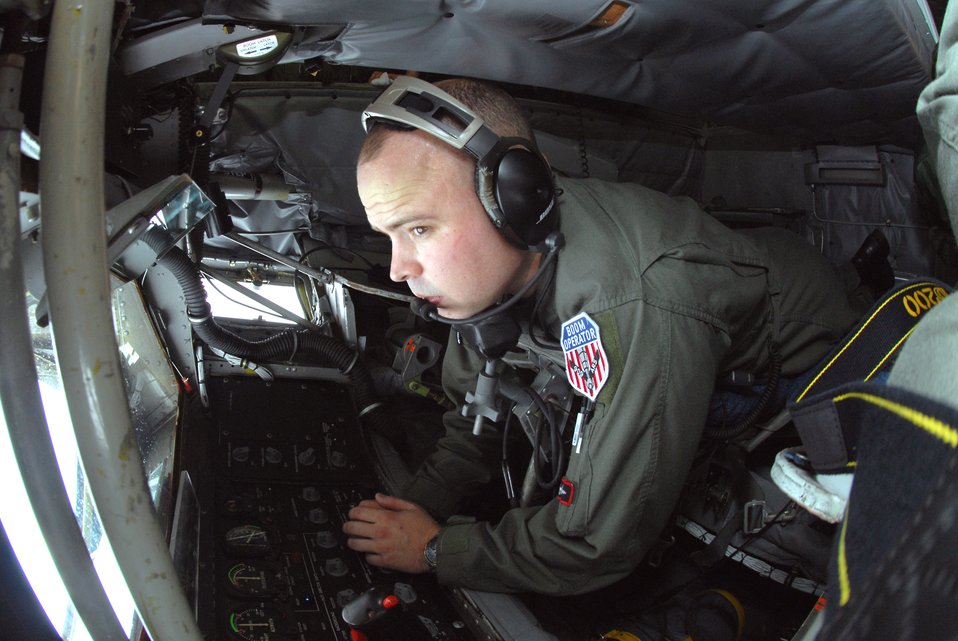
Bilateral training

Staff Sgt. Gabe Ourso looks out the window and waits for a Japanese F-15 to come into position for refueling on Wednesday, June 14. The mission was part of bilateral training conducted at Kadena Air Base, Japan. Sergeant Ourso is a boom operator with the 909th Air Refueling Squadron at Kadena.